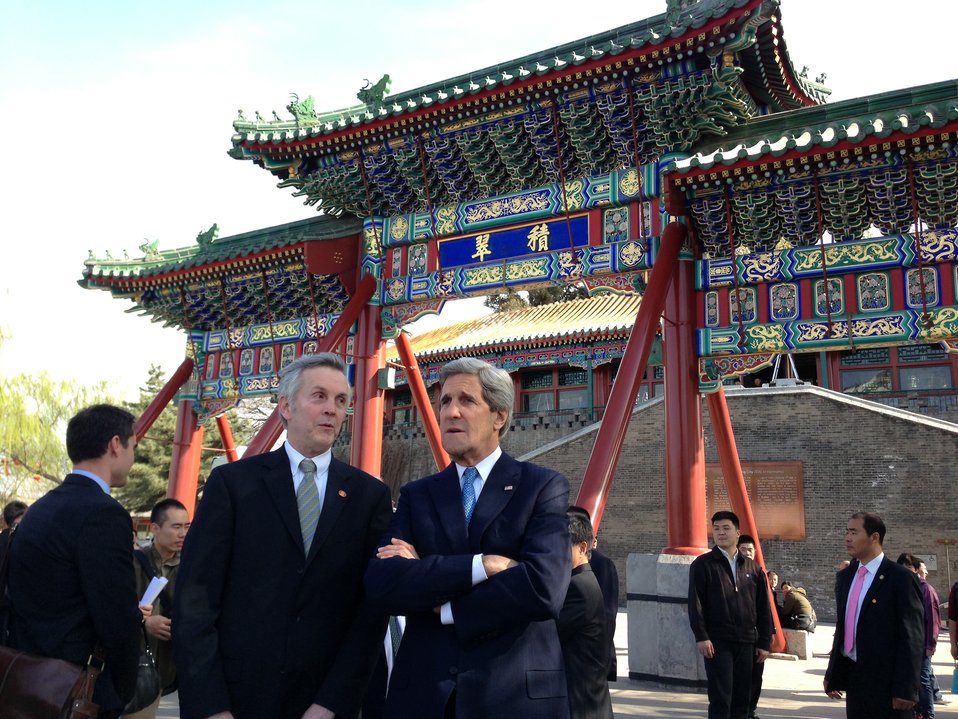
Secretary Kerry in Front of the South Gate to Beihai Park

U.S. Secretary of State John Kerry, accompanied by longtime Chinese translator James Brown, stand in front of the South Gate to Beihai Park and look at Bai Ta, or the White Pagoda, at Beihai Park in Beijing, China, on April 13, 2013.